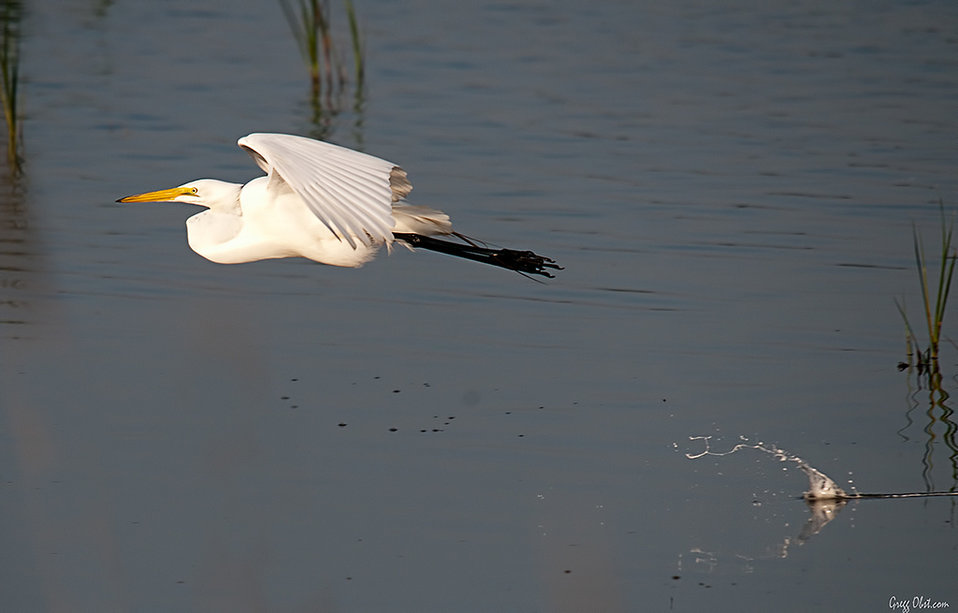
great egret

Bombay Hook National Wiildlife Refuge, DE